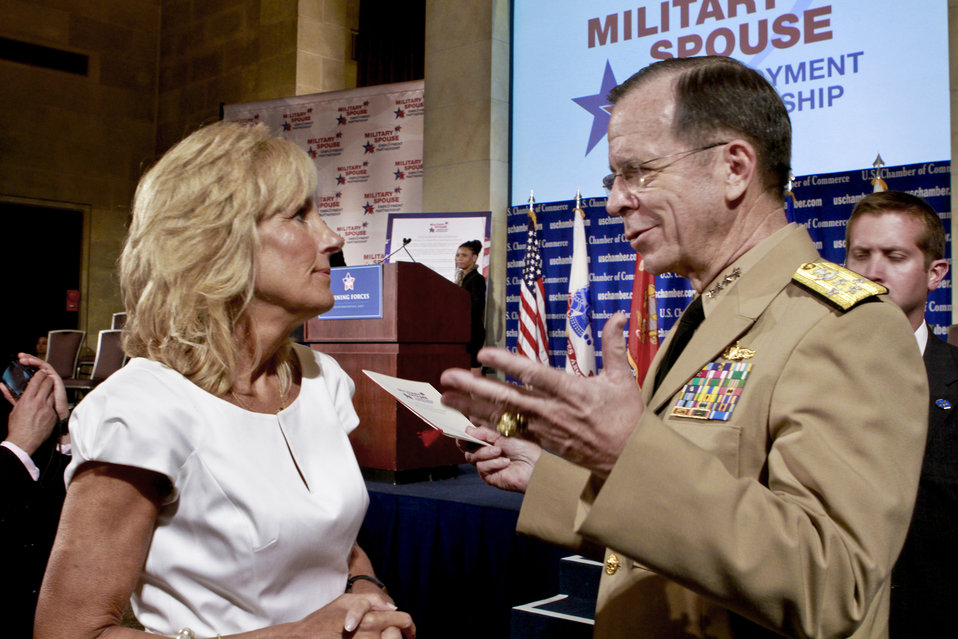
Spouse employment

Dr. Jill Biden and Navy Adm. Mike Mullen talk during the kickoff of the Military Spouse Employment Partnership June 29, 2011, at the U.S. Chamber of Commerce in Washington. Admiral Mullen's wife, Deborah, spoke at the event. The partnership is designed to promote meaningful, long-term employment opportunities between U.S. employers and military spouses. Dr. Biden is the wife of Vice President Joe Biden. Admiral Mullen is the chairman of the Joint Chiefs of Staff.